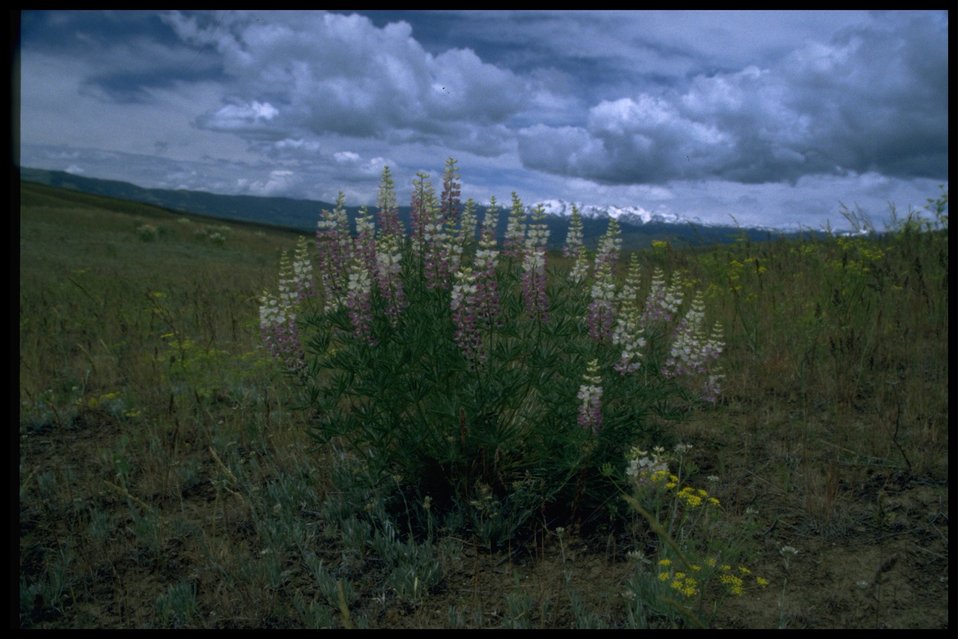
Farshot of Bigleaf Lupine wildflowers.